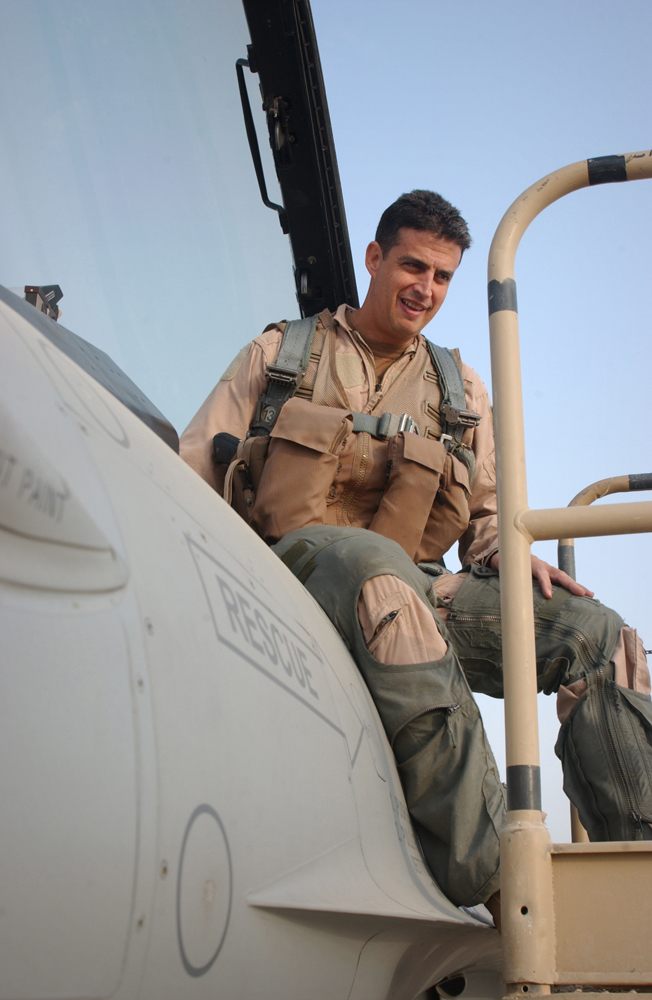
'Makos' support ground forces

ALI BASE, Iraq -- After spending here because of a weather diversion, Lt. Col. Jose Monteagudo gets into the cockpit of his F-16 Fighting Falcon Oct. 18. The colonel flies with the 332nd Expeditionary Fighter Squadron at Balad Air Base, Iraq. He is deployed from the 482nd Fighter Wing at Homestead Air Reserve Base, Fla. The fighters provide air support to Operation Iraqi Freedom coalition ground forces.